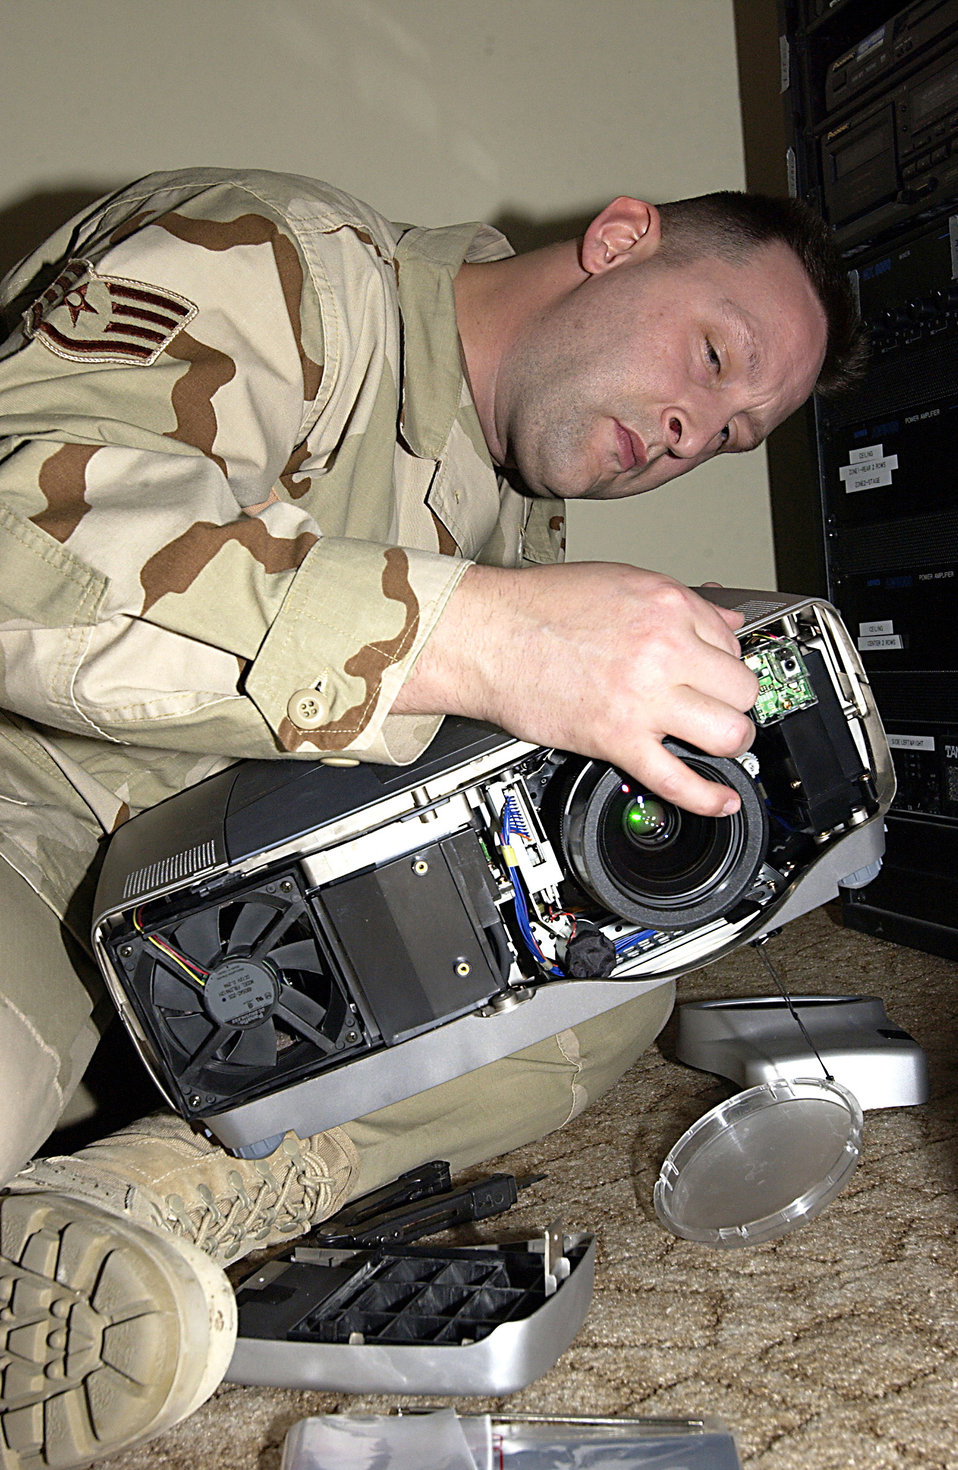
Troubleshooter

SOUTHWEST ASIA (AFPN) -- Staff Sgt. Ray Josephson troubleshoots a broken projector used here for morale functions. The sergeant is deployed from the 355th Communications Squadron at Davis-Monthan Air Force Base, Ariz.